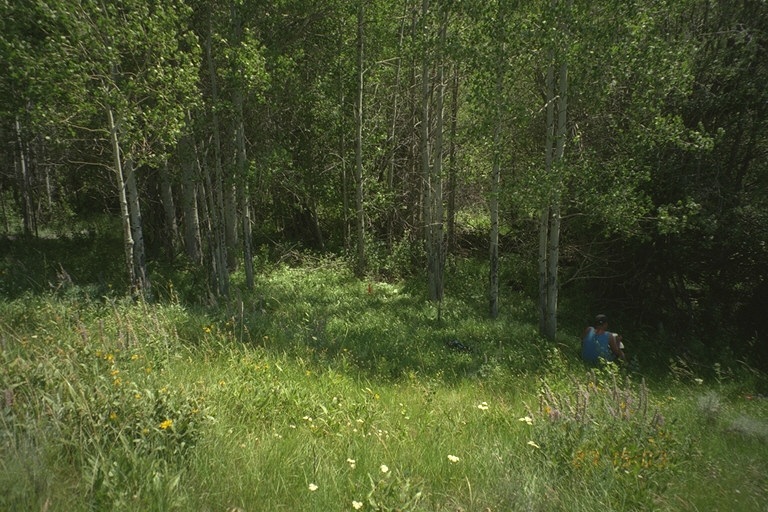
Riparian area Public Lands Salmon Field Office UCSC Upper Columbia Salmon Clearwater District